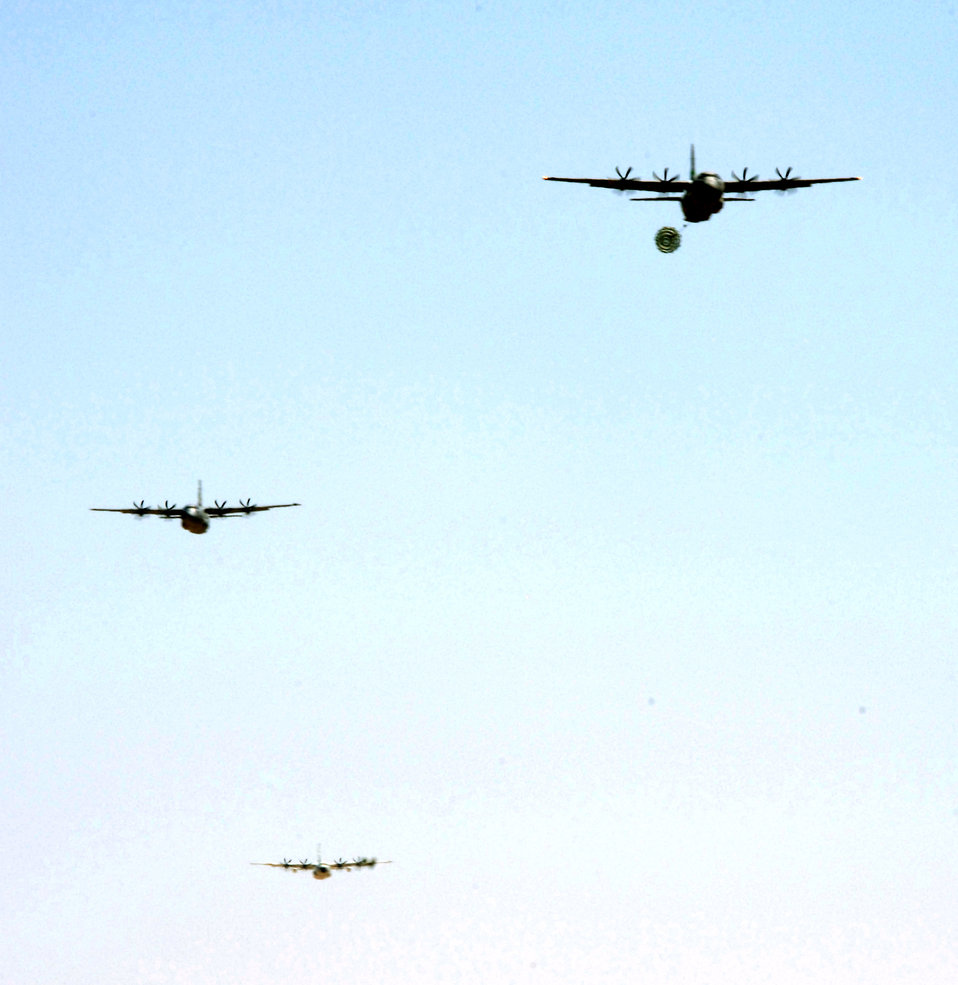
Pallet drop over California

C-130J Hercules aircraft fly over Edwards Air Force Base, Calif., on Sunday, April 30, 2006, during a mission to test and certify the aircraft's capability to drop the Type 5 heavy pallet. It is the first time the